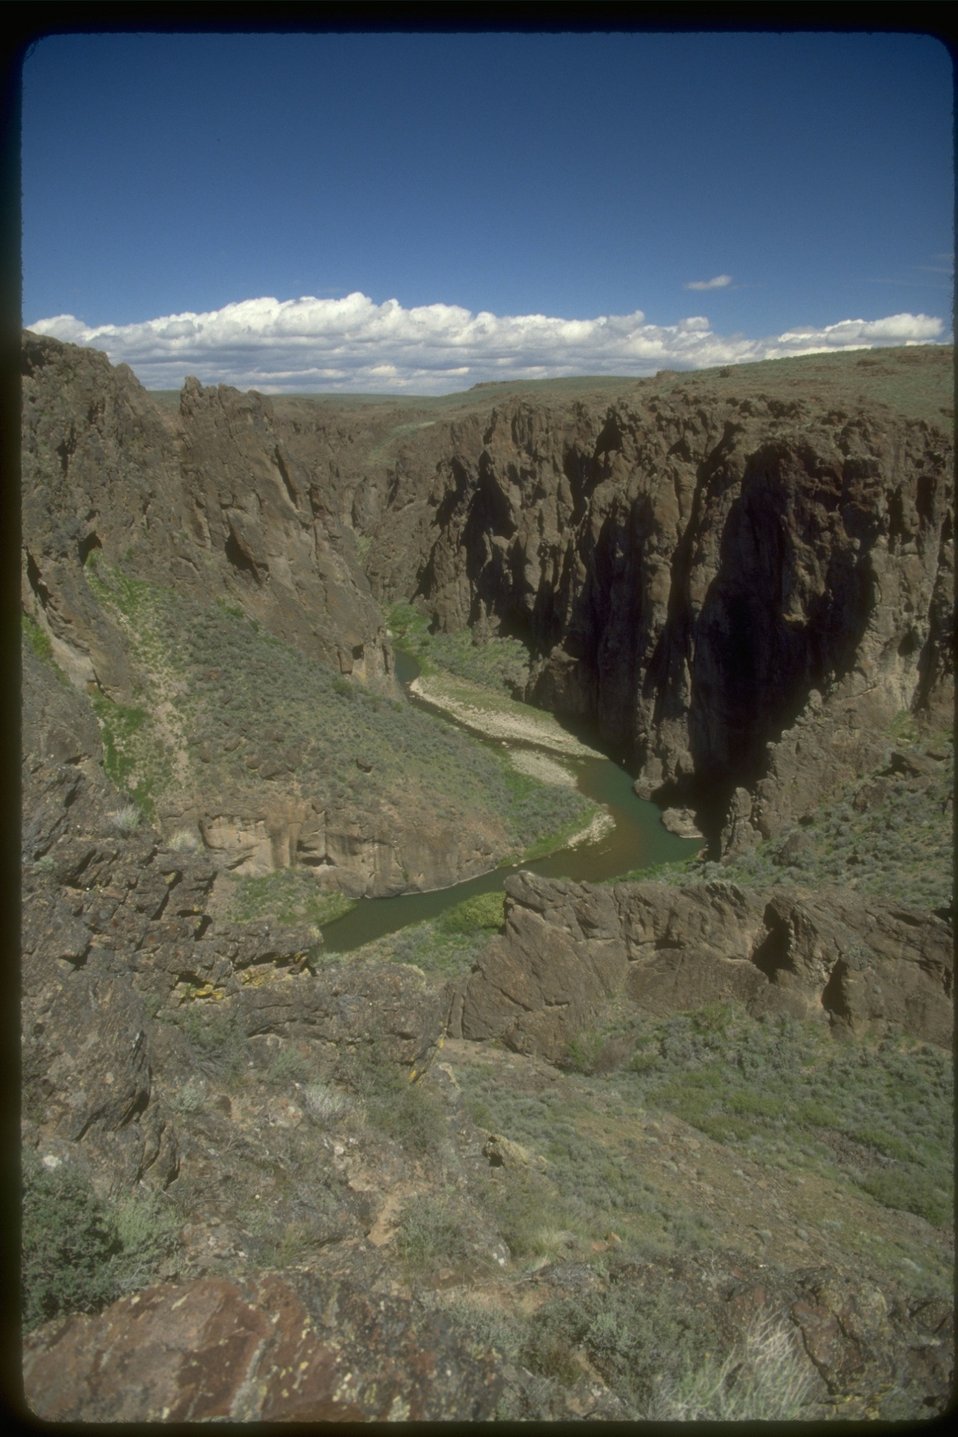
View from canyon rim looking down to the Owyhee River. There are very steep cliffs going down to the river.